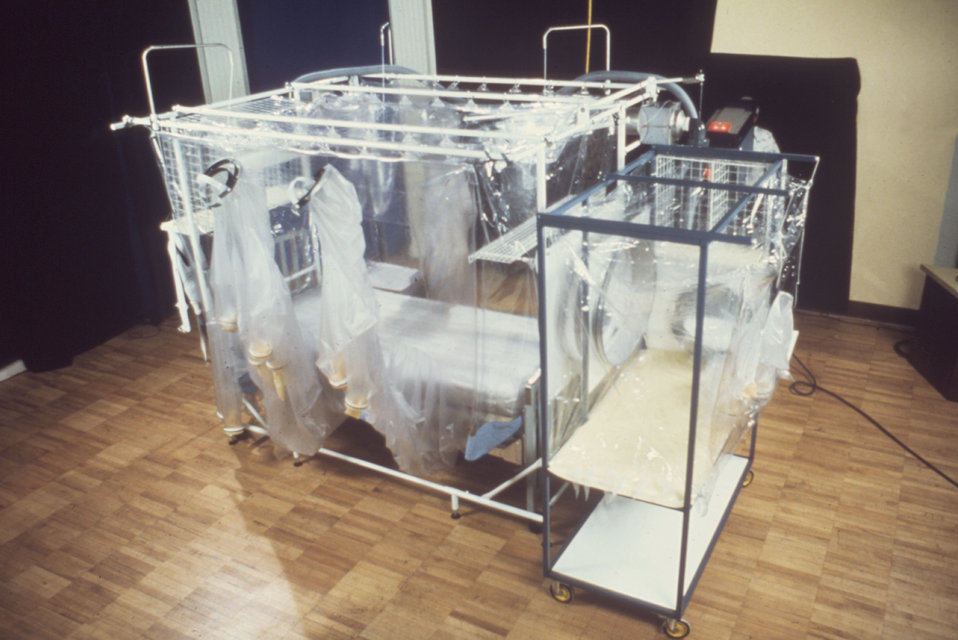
This 1977 photograph depicts a Vicker's Isolation Unit.